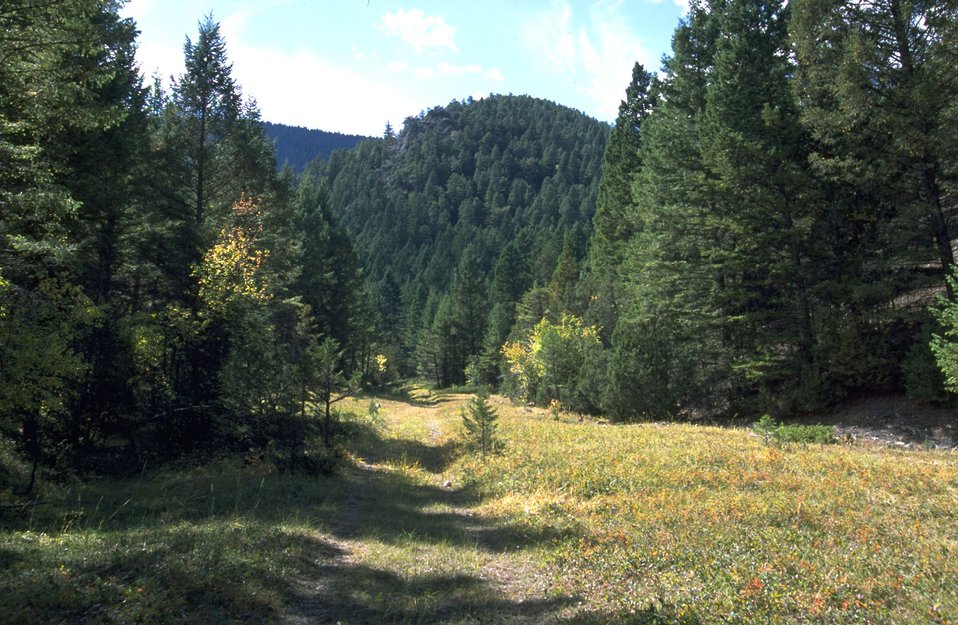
Two-Track Trail in Lauren Canyon